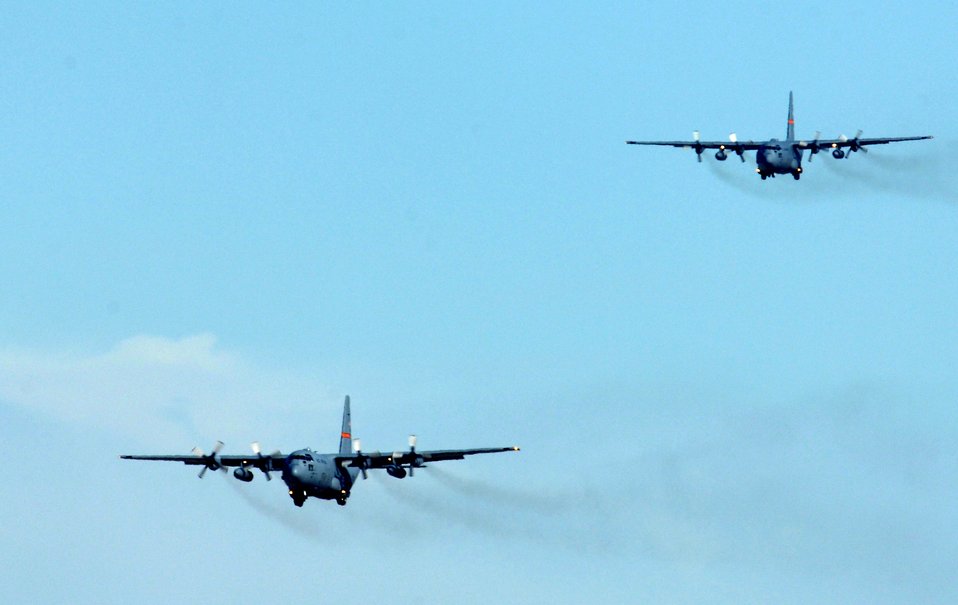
Mobility exercise

Two C-130 Hercules aircraft prepare to land at Nellis Air Force Base, Nev., after completing airdrop missions for a mobility exercise over the Keno range in Nevada.